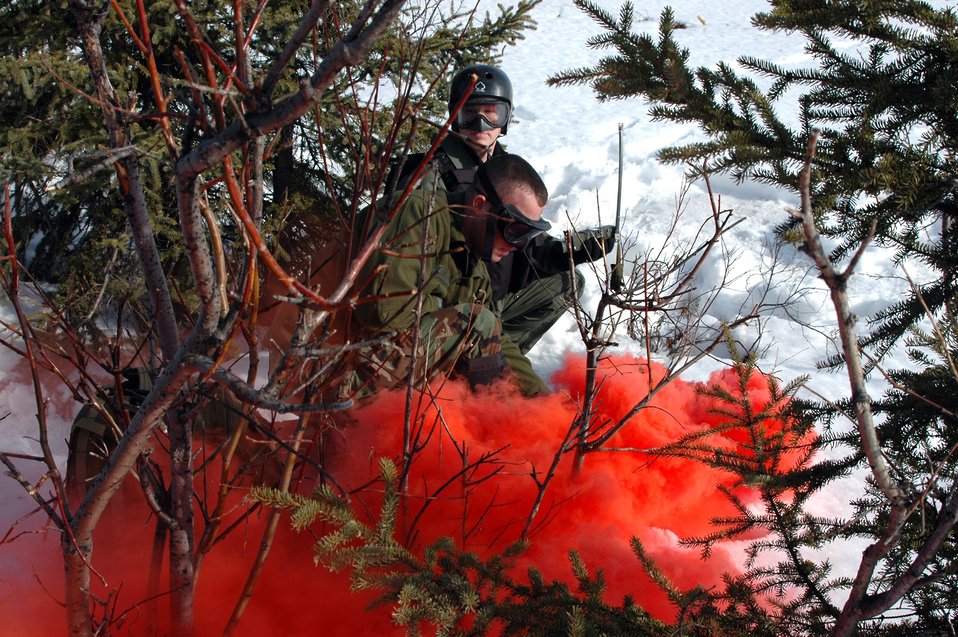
Red Flag-Alaska wraps up

Staff Sgt. Marc Richard (front) pops red smoke as Capt. Ryan Pumford watches for a recovery vehicle during combat search and rescue training at Eielson Air Force Base, Alaska, on Tuesday, May 2, 2006, during Red Flag-Alaska. Sergeant Richard is a survival, evasion, rescue and escape specialist with Detachment 1 of the 353rd Combat Training Squadron at Elmendorf AFB, Alaska. Captain Pumford is an F-16 pilot with the 18th Fighter Squadron at Eielson.